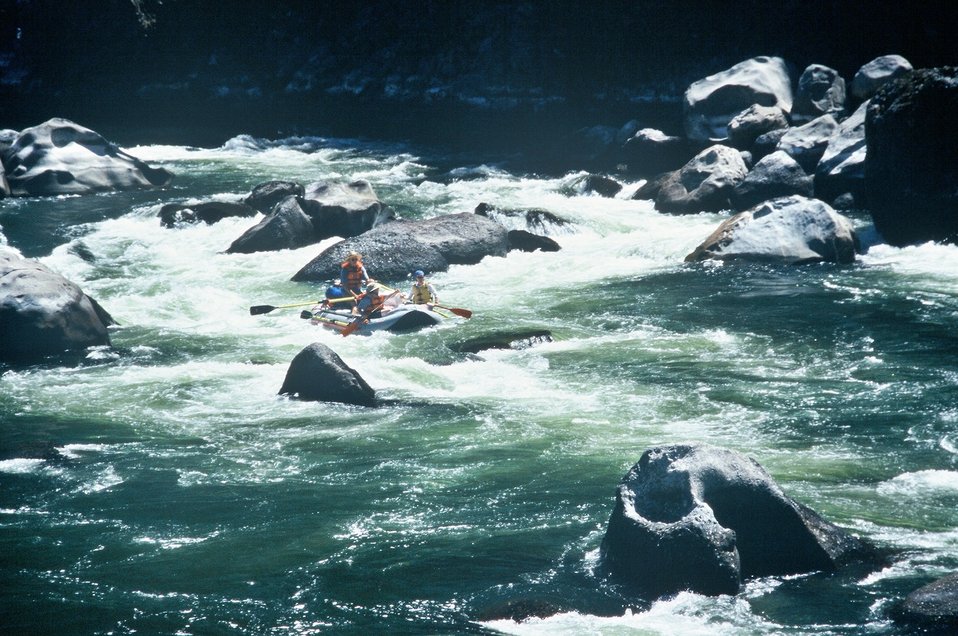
Blossom Rapids